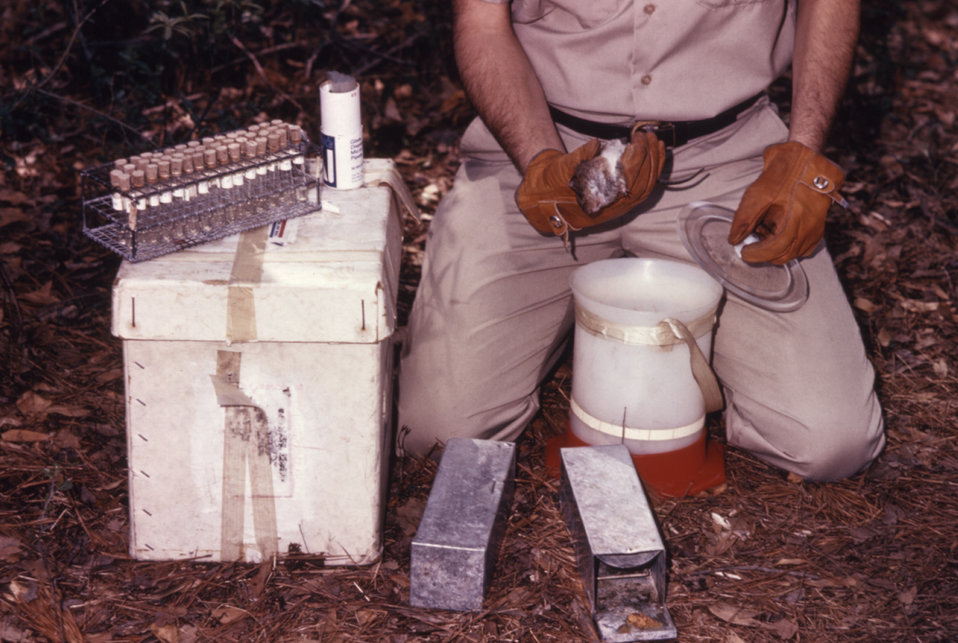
This field clinician is shown handling an anesthetized rat that was tested during a 1974 arbovirus study.